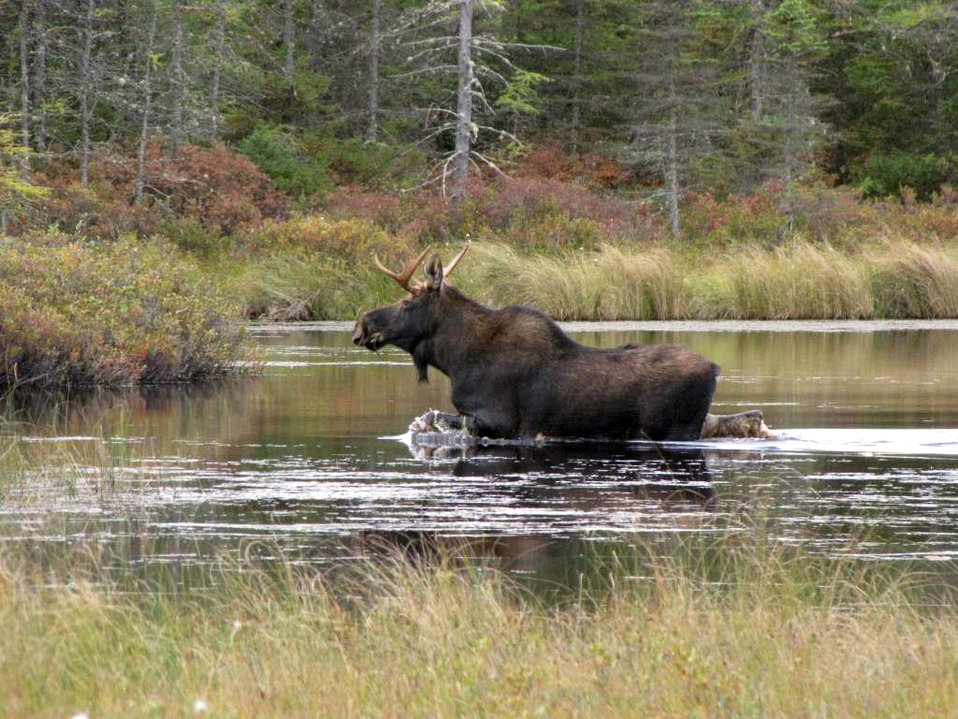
Photo of the Week - Moose at Conte National Fish and Wildlife Refuge

Photo of the week - 11/05/10

Moose at the Nulhegan Basin Division of the Silvio O. Conte National Fish and Wildlife Refuge in Vermont.

Credit: David Govatski/USFWS

www.fws.gov/r5soc/come visit/nulhegan basin division.html